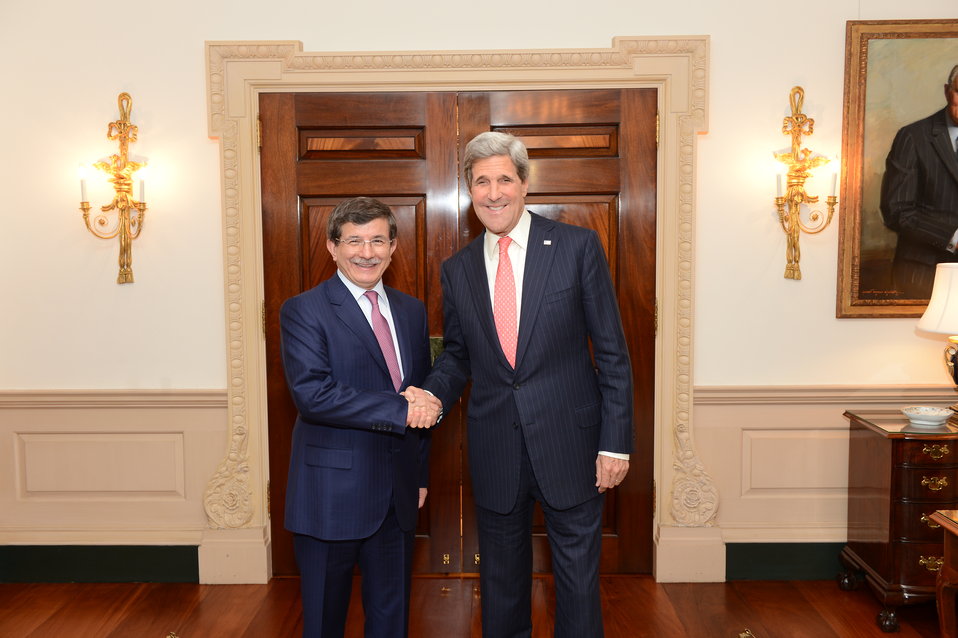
Secretary Kerry Meets With Turkish Foreign Minister Davutoglu

U.S. Secretary of State John Kerry meets with Turkish Foreign Minister Ahmet Davutoglu at the U.S. Department of State in Washington, D.C., on May 16, 2013.